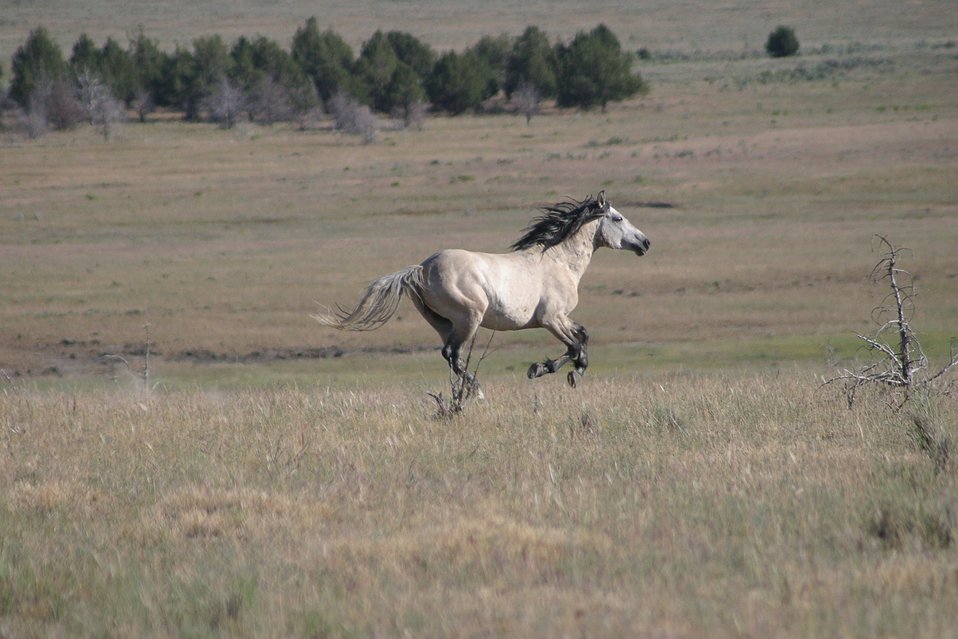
Wild Horse(s) in the Kiger Wild Horse Herd Management Area.